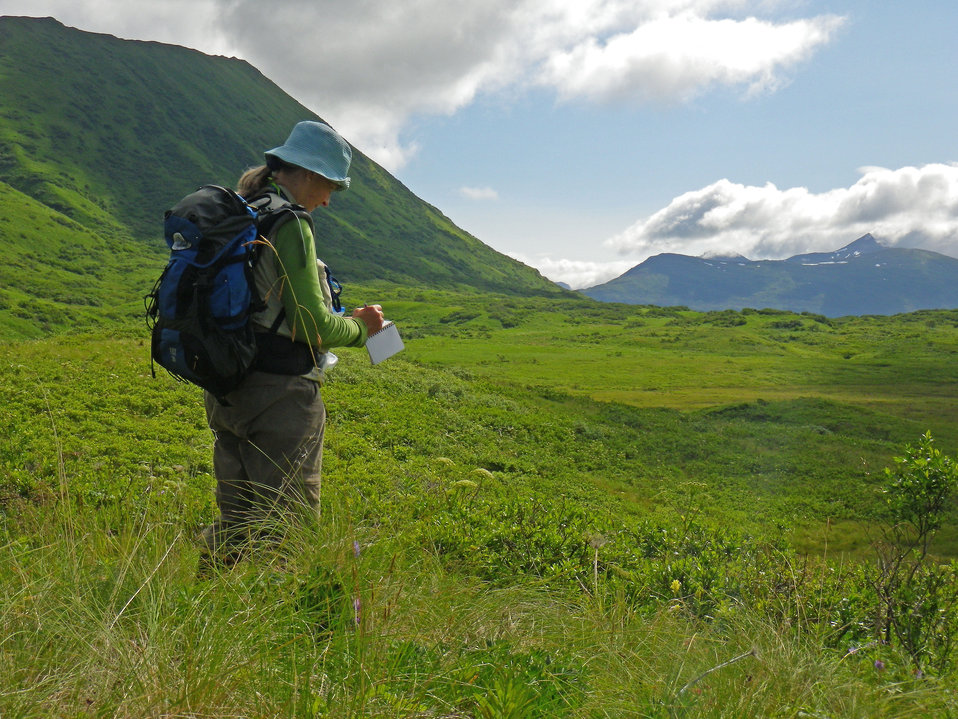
Volunteer botanist Stacy Studebaker

Photo Credit: Mike Sirofchuck/USFWS
Source: Kodiak NWR